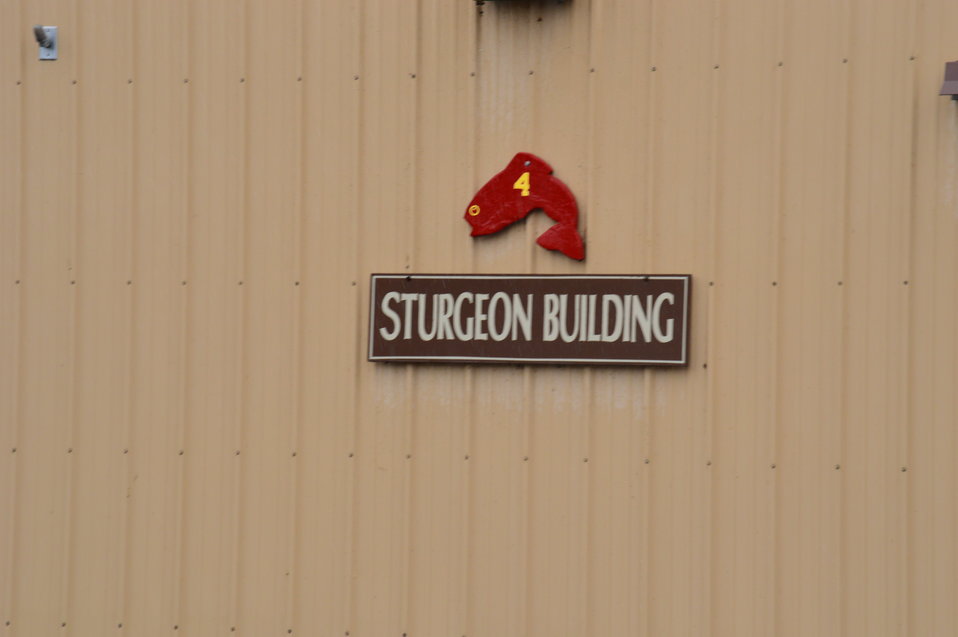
Sturgeon Building

Garrison Dam National Fish Hatchery in North Dakota.